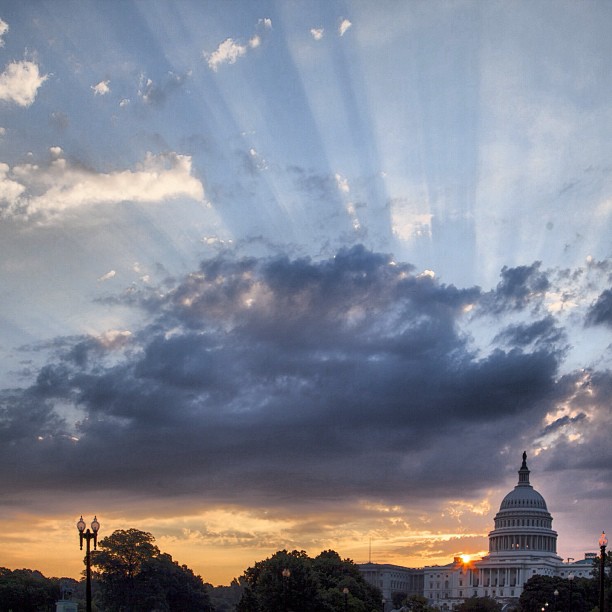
Capitol sunrise on a day expected to feel like 100 in #DC.